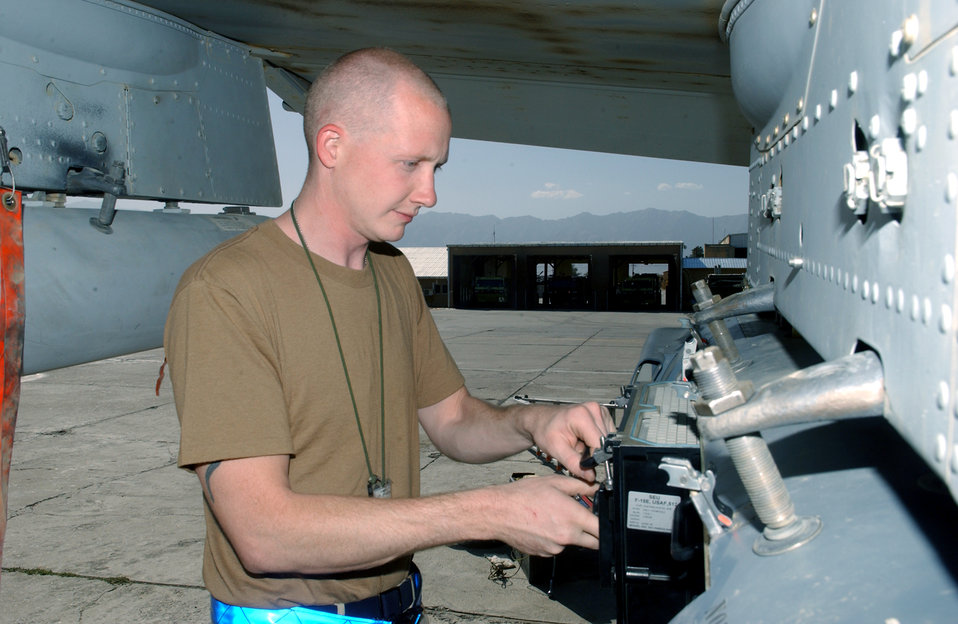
Airmen keep Litening pods striking

BAGRAM AIR BASE, Afghanistan -- Airman 1st Class Steven Brooks removes a part from an A-10 Thunderbolt II Laser Infrared Targeting and Navigation pod. The part is one of six self-contained units on the pod which are sent to the manufacturer for service. Airman Brooks is assigned to the 354th Expeditionary Aircraft Maintenance Squadron here.